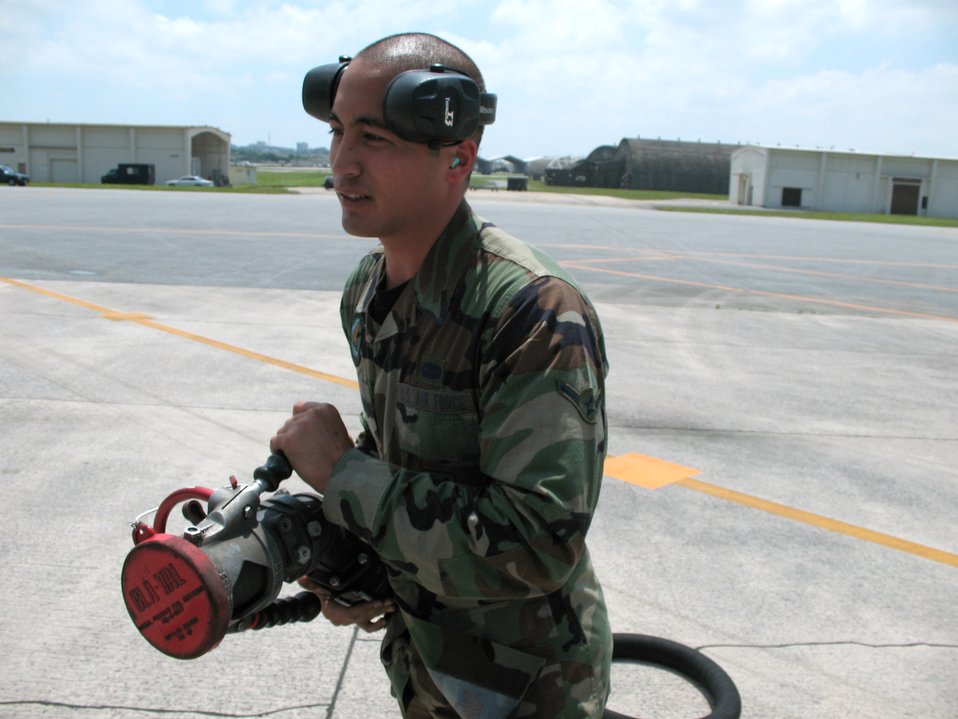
F-22s use refueling 'pit stop'

Amn Amery Caoili prepares the fuel hose before F-22 Raptors pull in for gas during hot pit operations at Kadena Air Base, Japan. Hot pits allow fighters to be refueled in a fraction of the time it would take if the aircraft had to be shut off and parked during a normal turn time. Airman Caoili is a fuels distribution operator with 18th Logistics Readiness Squadron.